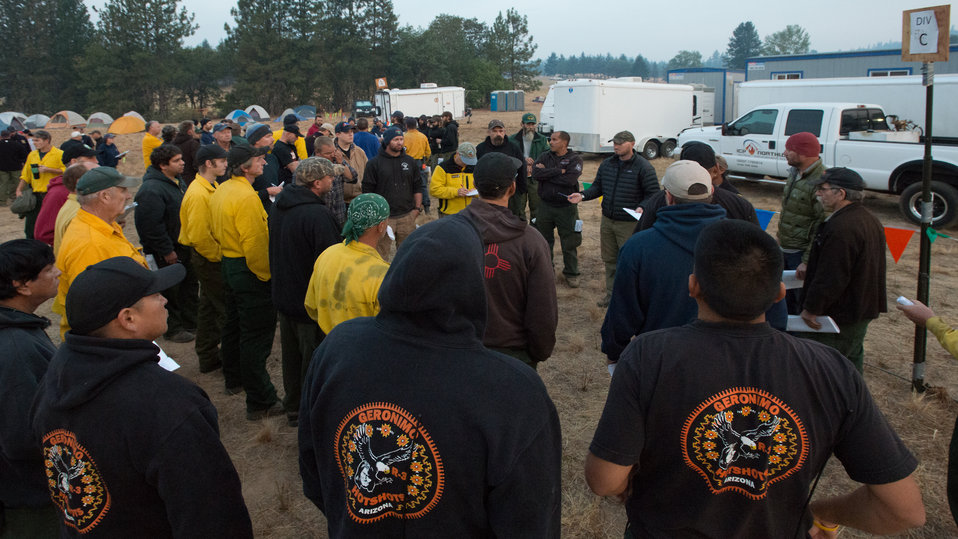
Following morning Briefing crews such as the Geronimo Hotshots (foreground) gather around Division Task Force leaders for assignments at the Big Windy Complex Wildlands Fire, Incident Command Post (ICP) in Merlin, OR on Friday, Aug 9, 2013. The fire center is approximately 15 miles west of Interstate-5 and East Northeast of Galice, Oregon.